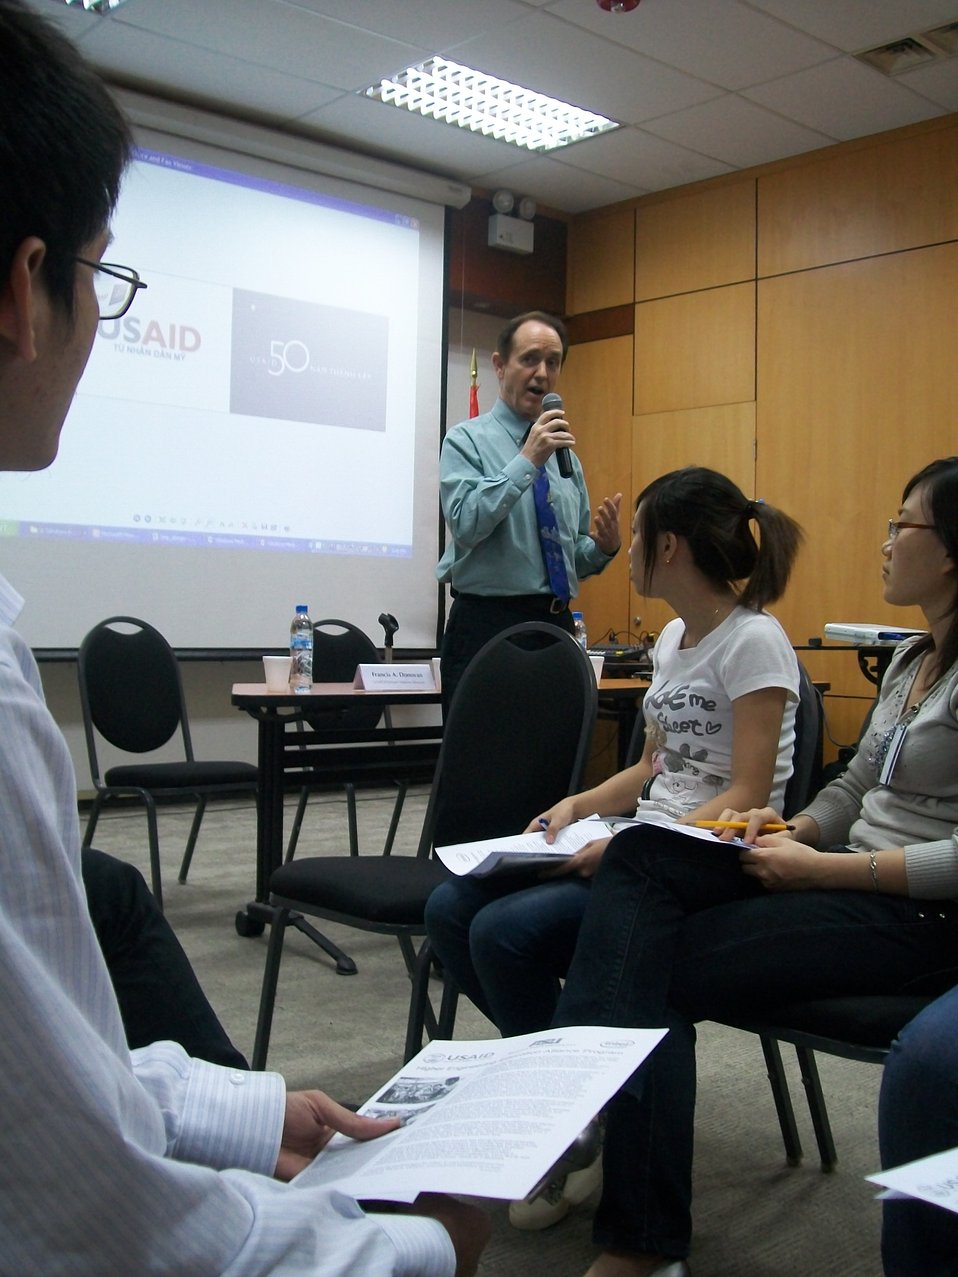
American Center and USAID host Debate Club on Higher Education

USAID/Vietnam Mission Director Francis Donovan address students and discusses the USAID-supported Higher Engineering Education Alliance Program with Arizona State University, Intel, and others.